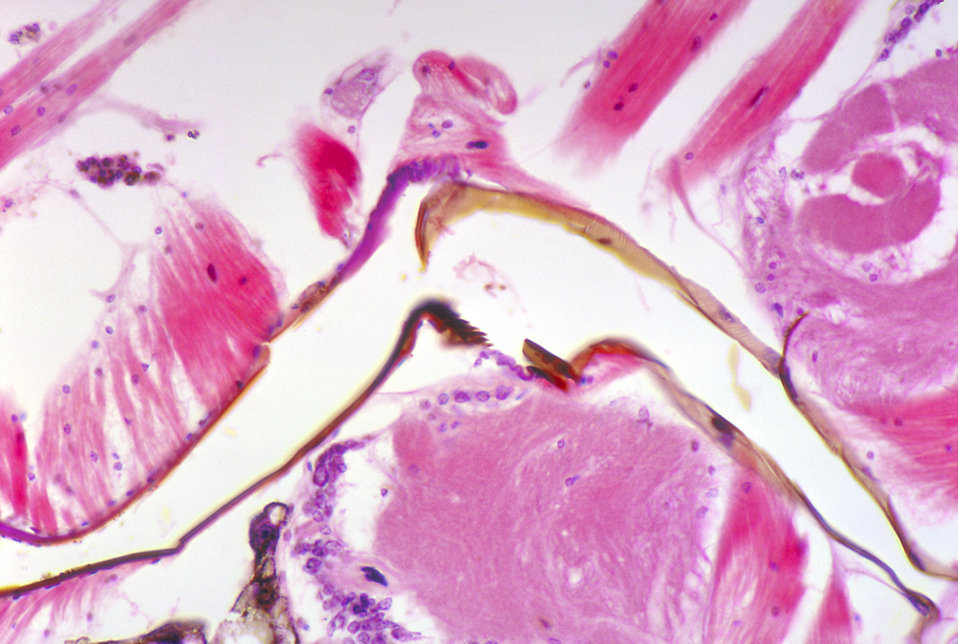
A photomicrograph revealing the histology of Onchocerca volvulus developing in a Black Fly, Simulium ochraceum.